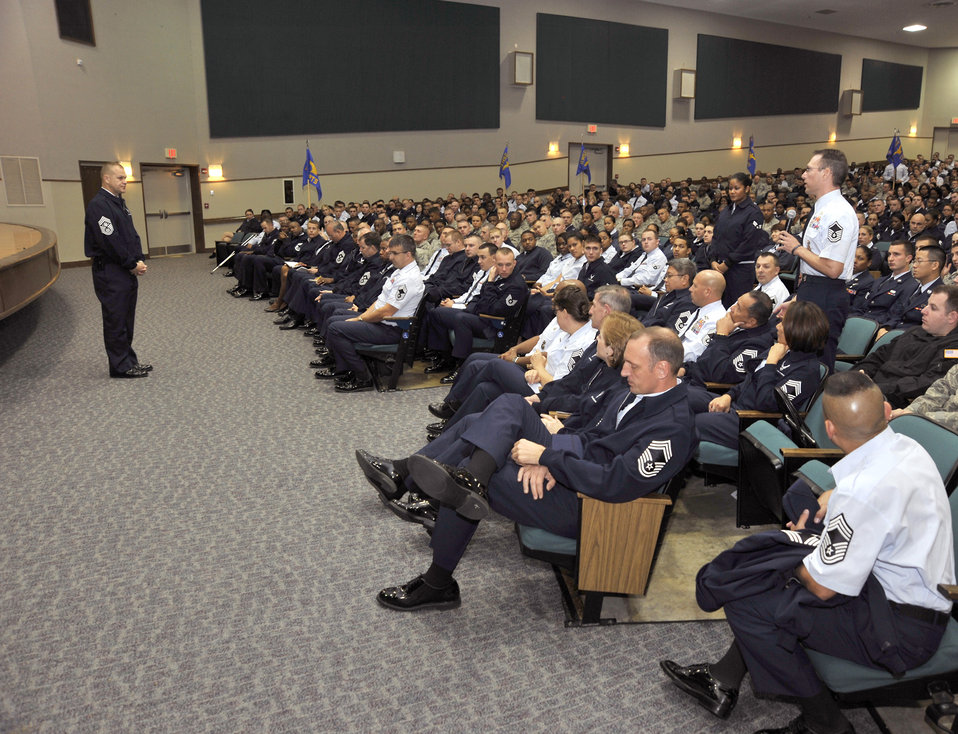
CMSAF visits Andrews, discusses Air Force issues

Chief Master Sgt. of the Air Force James A. Roy takes a question from Master Sgt. Eric Marsh, the 11th Security Forces Squadron assistant flight chief, Nov. 1, 2010, during an enlisted call at Joint Base Andrews, Md. Chief Roy spoke to Airmen about a number of issues facing the Air Force including manning, deployments and suicides.